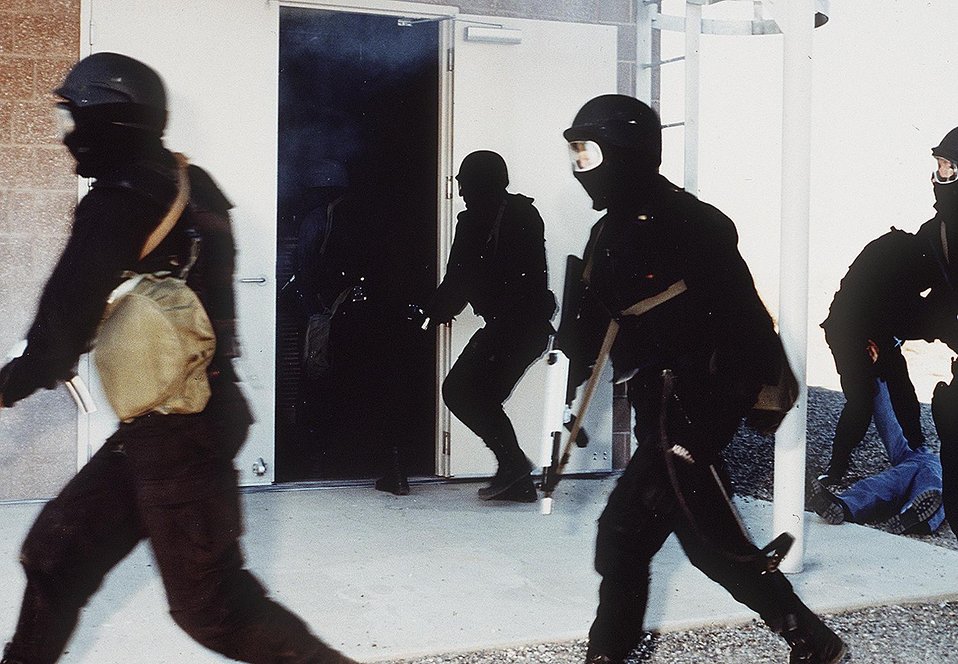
SPECIAL RESPONSE TEAM PRACTICES FORCED ENTRY AT THE HAMMER SEARCH AND RESCUE BUILDING.

THE HAZARDOUS MATERIALS MANAGEMENT AND EMERGENCY RESPONSE CENTER (HAMMER), IS A TRAINING FACILITY LOCATED IN RICHLAND, WASHINGTON. HAMMER AREAS OF EXPERTISE INCLUDE EMERGENCY OPERATIONS, ENVIRONMENTAL AND WASTE MANAGEMENT AND RECOVERY, FIRE OPERATIONS, LAW ENFORCEMENT, NUCLEAR SAFETY, OCCUPATIONAL SAFETY AND HEALTH AND TRANSPORTATION. HAMMER PLAYS AN IMPORTANT ROLE IN HOMELAND SECURITY TRAINING.